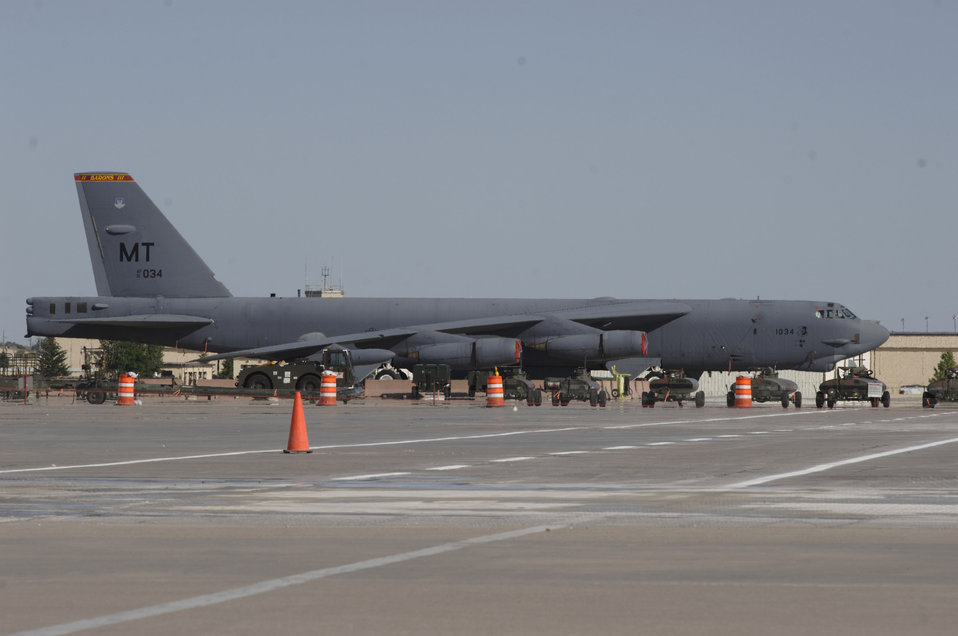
Air Force will get new bomber

General Ronald E. Keys, Air Combat Command commander, said the Air Force is looking to get a next-generation long-range bomber by 2018. The command is funded for a new bomber, he said during his presentation Sept. 26 at the Air Force Association's Air & Space Conference and Technology Exposition in Washington D.C. Meanwhile, the current bomber fleet, including this B-52 Stratofortress, sitting on the ramp at Minot Air Force Base, N.D., will continue to be a mainstay in the war on terrorism.